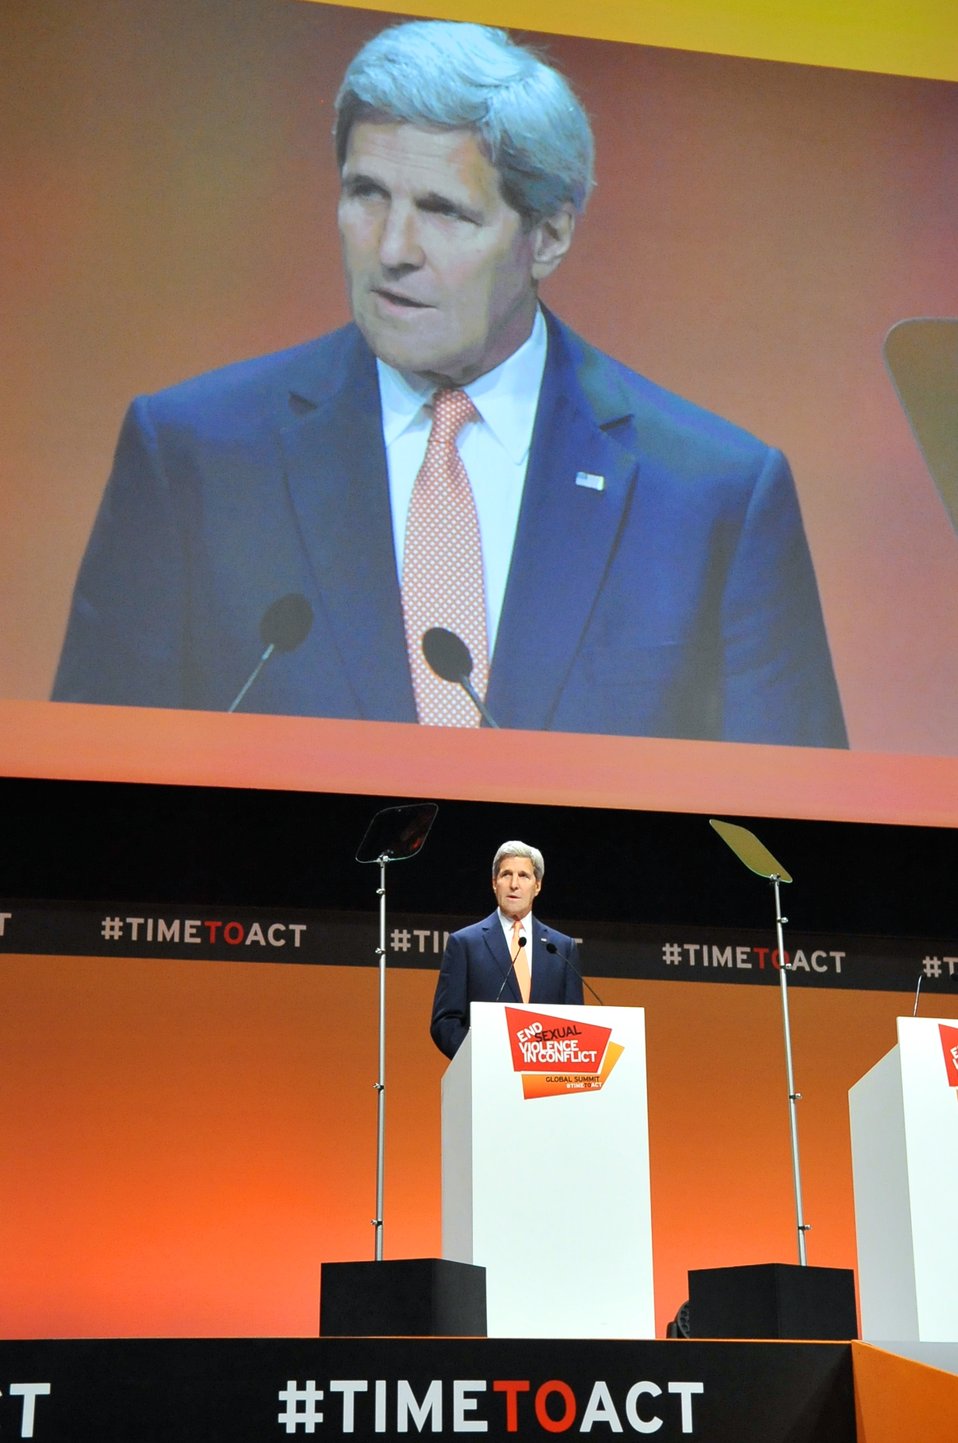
Secretary Kerry Delivers Keynote Address at 2014 Global Summit to End Sexual Violence During Conflict

U.S. Secretary of State John Kerry speaks to an audience of about 1,200 - including host British Foreign Secretary William Hague and actors Angelina Jolie and Brad Pitt - as he delivers the keynote address at the 2014 Global Summit to End Sexual Violence in Conflict in London, UK, on June 13, 2014.